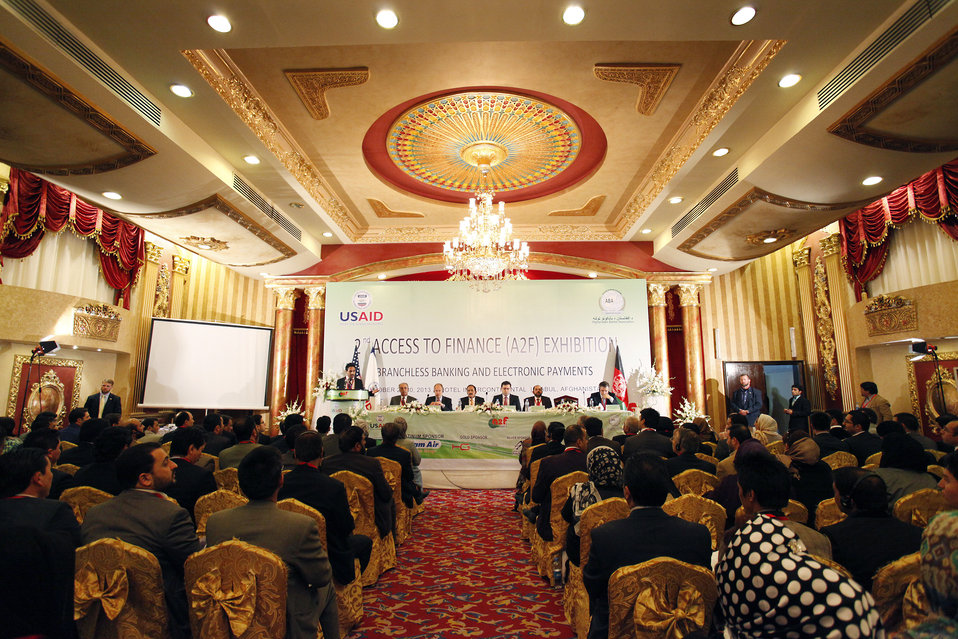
Access to Finance Exhibition in Kabul

Thousands of business representatives from across Afghanistan attended the Second Access to Finance Exhibition in Kabul on Tuesday, October 29, 2013. The exhibition focuses on branchless banking and electronic payments.